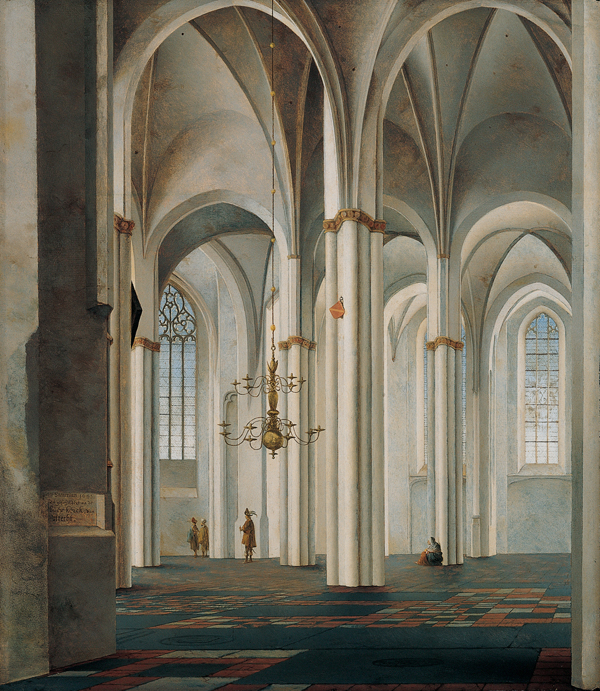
'Interior of the Buurkerk, Utrecht', oil on panel painting by Pieter Janszoon Saenredam